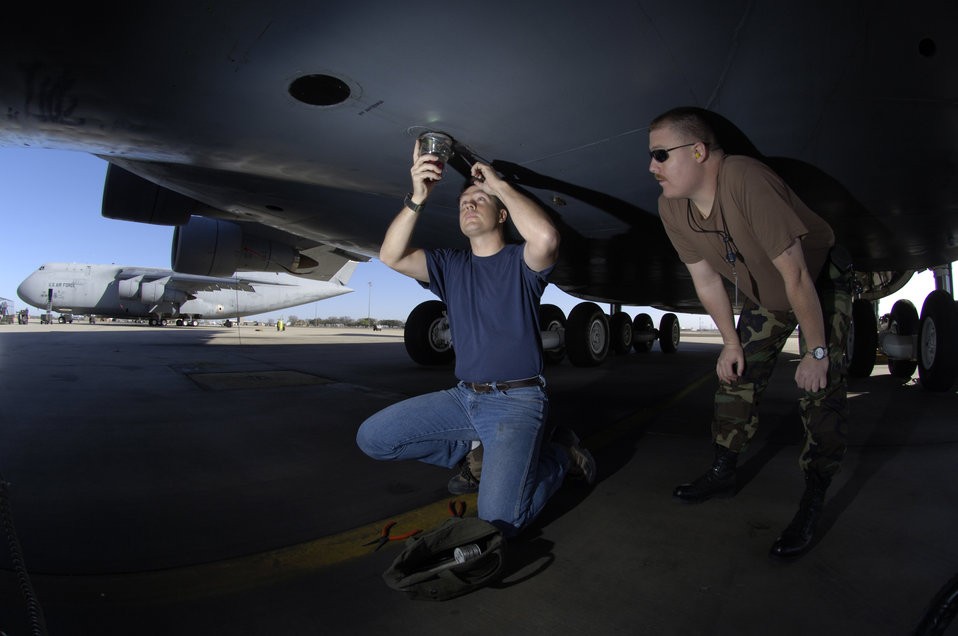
Galaxy maintenance

Dave Plemmons and Tech. Sgt. Mark Kelleher change an anti-collision strobe light on a C-5A Galaxy at Lackland Air Force Base, Texas. The light is visible for five to 10 miles. Both Air Reserve Technicians are assigned to the 433 Airlift Wing's maintenance squadron.